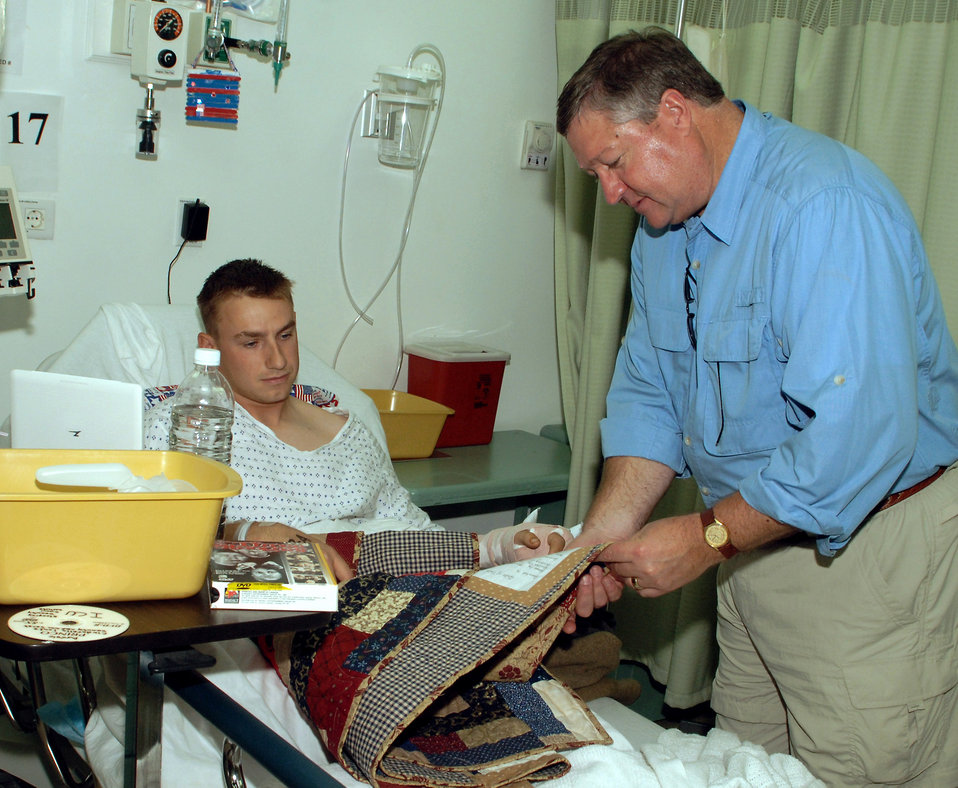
Secretary tours Joint Base Balad, shares Air Force vision

Secretary of the Air Force Michael B. Donley presents a quilt to Marine Cpl. Zhenya Killeen during a visit to the Air Force Theater Hospital Oct. 13 at Joint Base Balad, Iraq. Corporal Killeen was injured while trying to prevent damage to a snatch block on a wrecker truck. Surgeons could not save his ring finger but did save the rest of his hand. He is deployed to the 1st Battalion, 4th Marines Motor Transport Company, from Camp Pendleton, Calif.